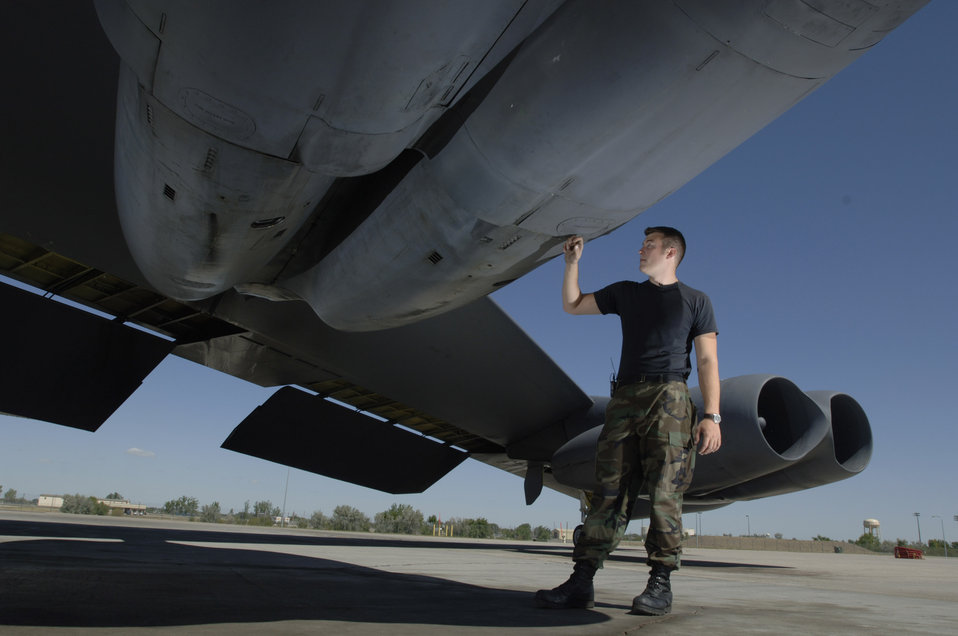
B-52 Stratofortress ages like wine

Staff Sgt. Kory McLeod inspects the cowling of engines No. 3 and 4 under the wing of a B-52 Stratofortress at Minot Air Force Base, N.D., Aug. 22. Sergeant McLeod, from Manchester, N.H., is a crew chief with the 5th Aircraft Maintenance Squadron.